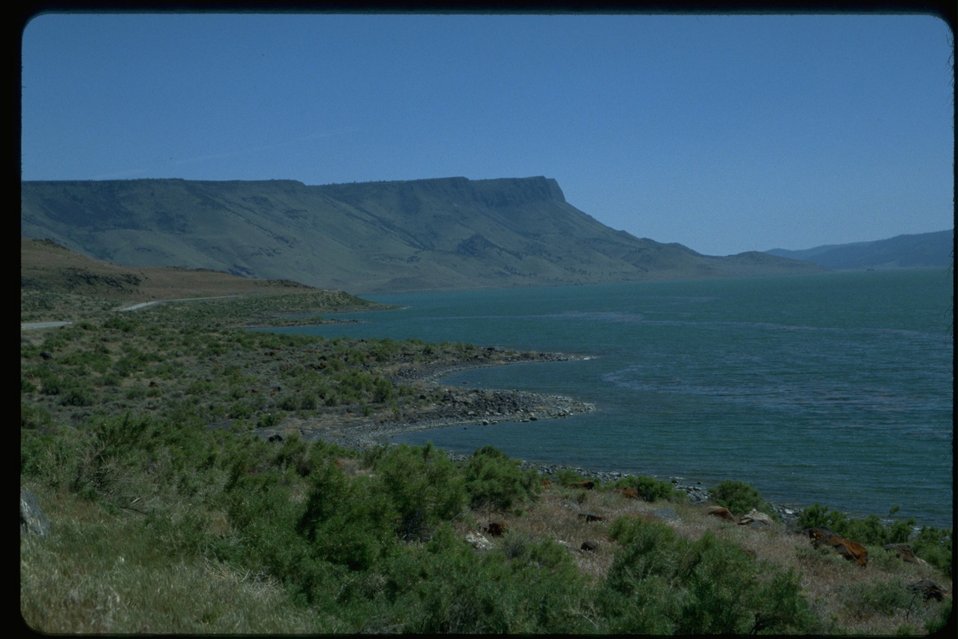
Abert Rim from north end looking south.